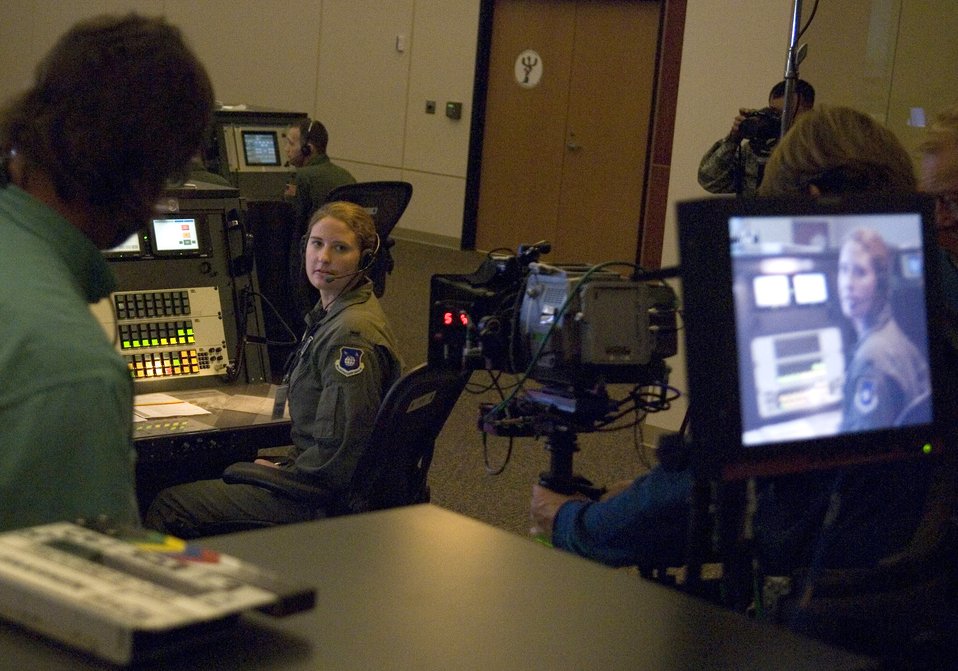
Vandenberg Airmen star in Air Force national campaign

VANDENBERG AIR FORCE BASE, Calif.--First Lieutenant Lauren Neely, a launch control officer with the 2nd Range Operations Squadron, receives direction from the production crew during the filming of a commercial at the 1st Lt. Lauren Neely receives direction from the production crew during the filming of a commercial at the Western Range Operations Control Center Feb. 14 at Vandenberg Air Force Base, Calif. The commercial was one of three commercials being produced to both aid in recruiting as well as raise public awareness of three Air Force-unique capabilities. These capabilities include the missions of Air Force Space Command and Air Force Cyber Command, as well as the Air Force's global reach. Lieutenant Neely is a launch control officer with the 2nd Range Operations Squadron.